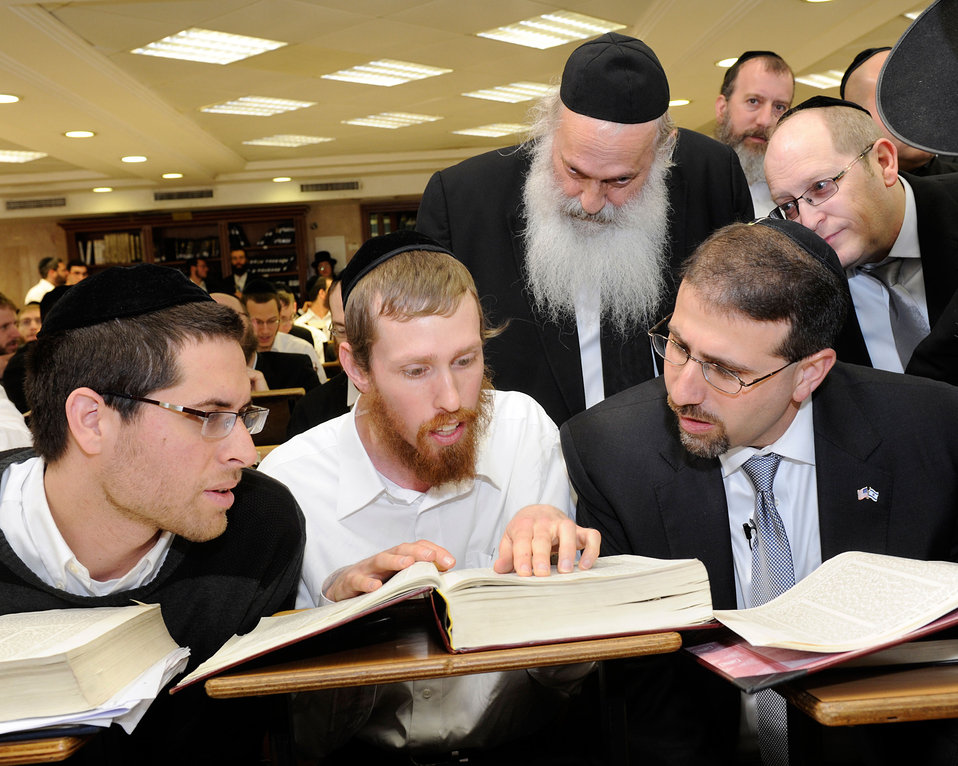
Ambassador Shapiro Visits the Mir Yeshiva

U.S. Ambassador to Israel Daniel B. Shapiro visits the Mir Yeshiva in Jerusalem one of the largest yeshivas in the world with over 6,000 students, 1,000 of whom are from the United States, on January 10, 2012. Ambassador Shapiro is accompanied by Rabbi Aharon Chodosh, Rabbi Nachman Levovitz, Rabbi Binyamin Carlebach and Rabbi Aaron David Davis, the mashgiach ruchani, spiritual supervisor of all the students at the Mir.